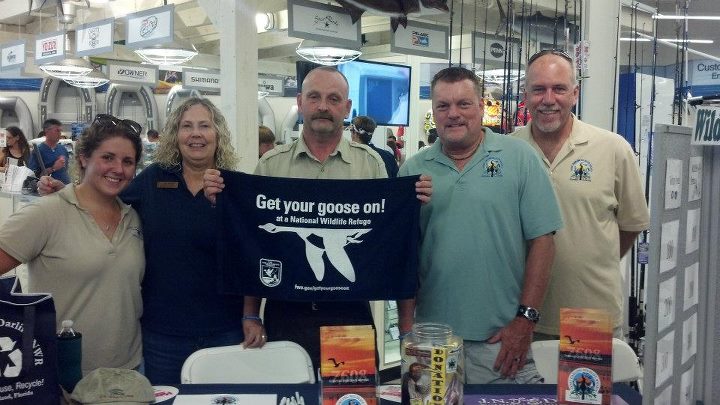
Get Your Goose On!